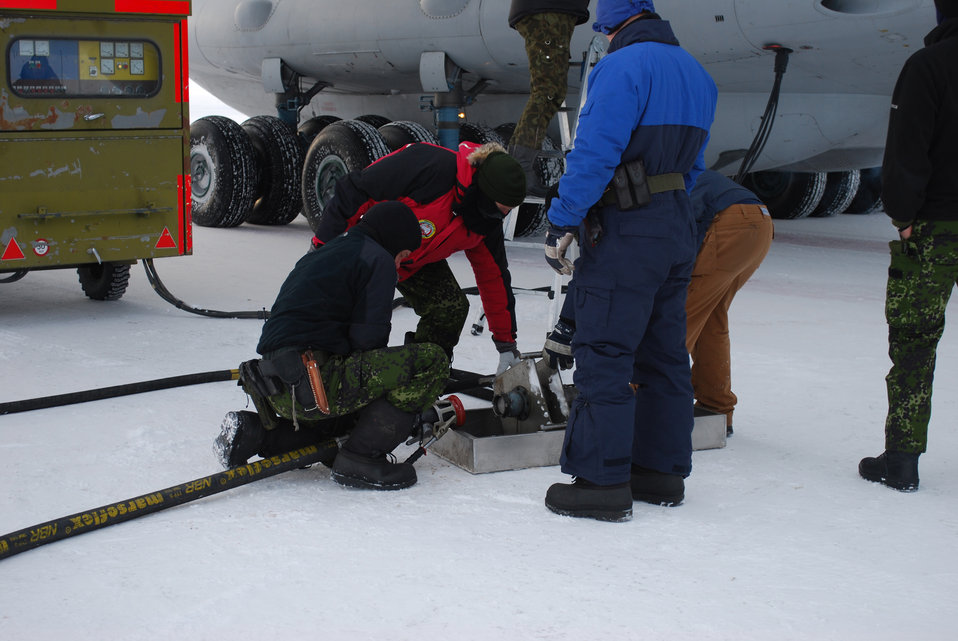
Operation Brilliant Ice 2009

Ukrainians and Danes transfer fuel from a Ukrainian IL-76 Ilyushin aircraft to reserve tanks at the Danish military outpost, Station Nord, some 600 miles north of Thule Air Base, Greenland, March 23 during Operation Brilliant Ice 2009. The fuel delivery, supplied by Ukraine strategic airlift, will sustain Station Nord for another year. .